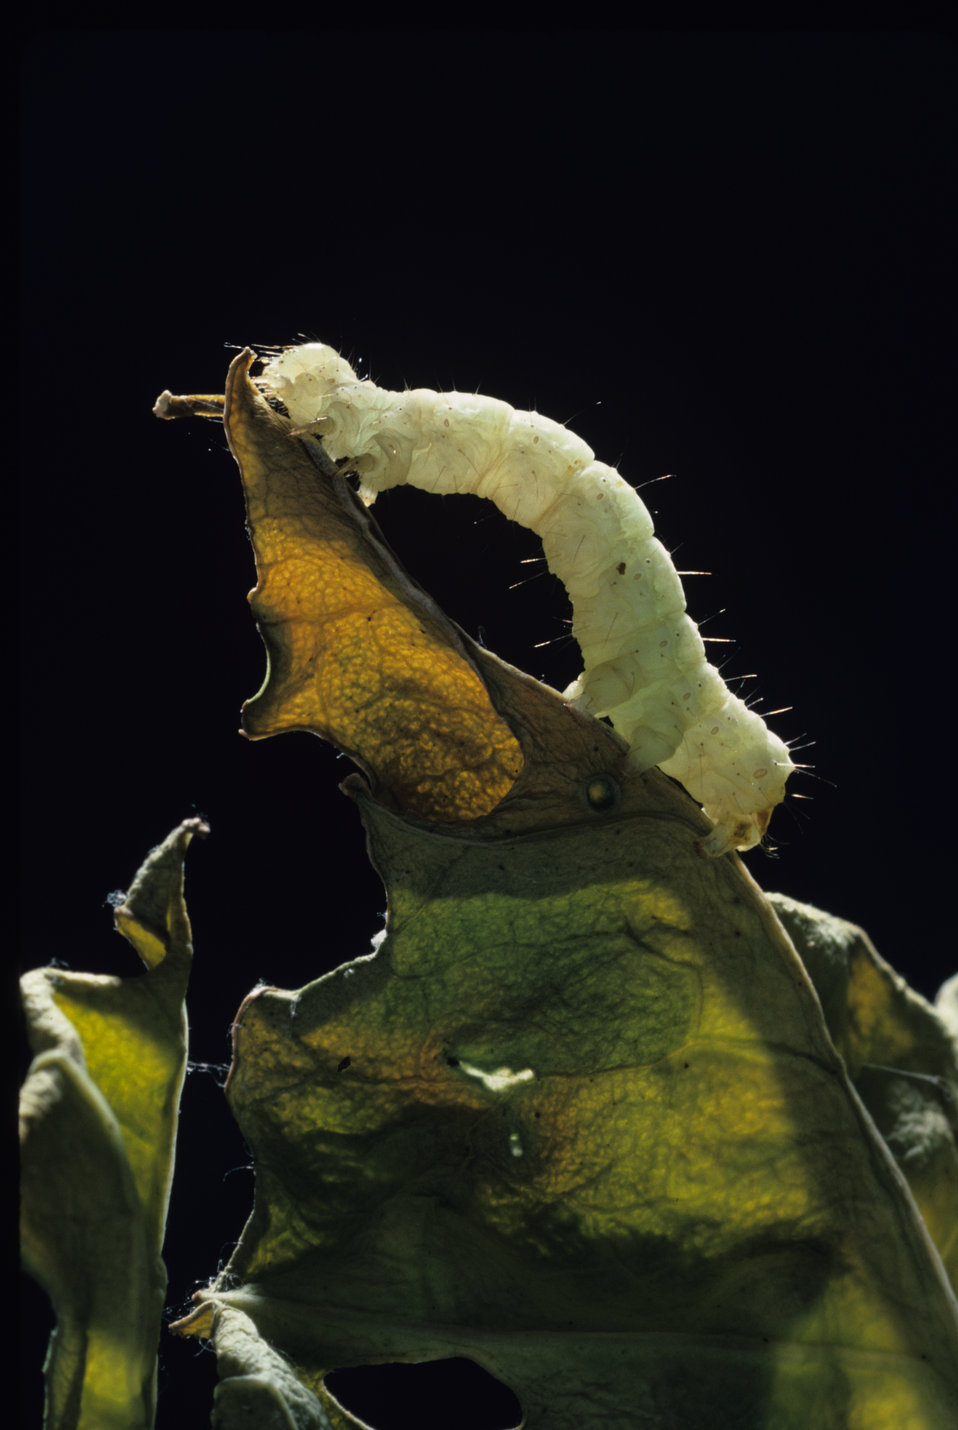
The cabbage looper worm has a smooth and pale green skin with white stripes and is one of a many species called cabbageworm. It is called a looper because it arches its body as it crawls, inchworm-style. This species is very destructive to plants due to its voracious consumption of leaves. It feeds on Brussels sprout, cabbage, cauliflower, collards, kale, kohlrabi, mustard, broccoli, turnips, watercress, tomatoes, cucumbers and potatoes. The adult of the species is a nocturnal brown moth.